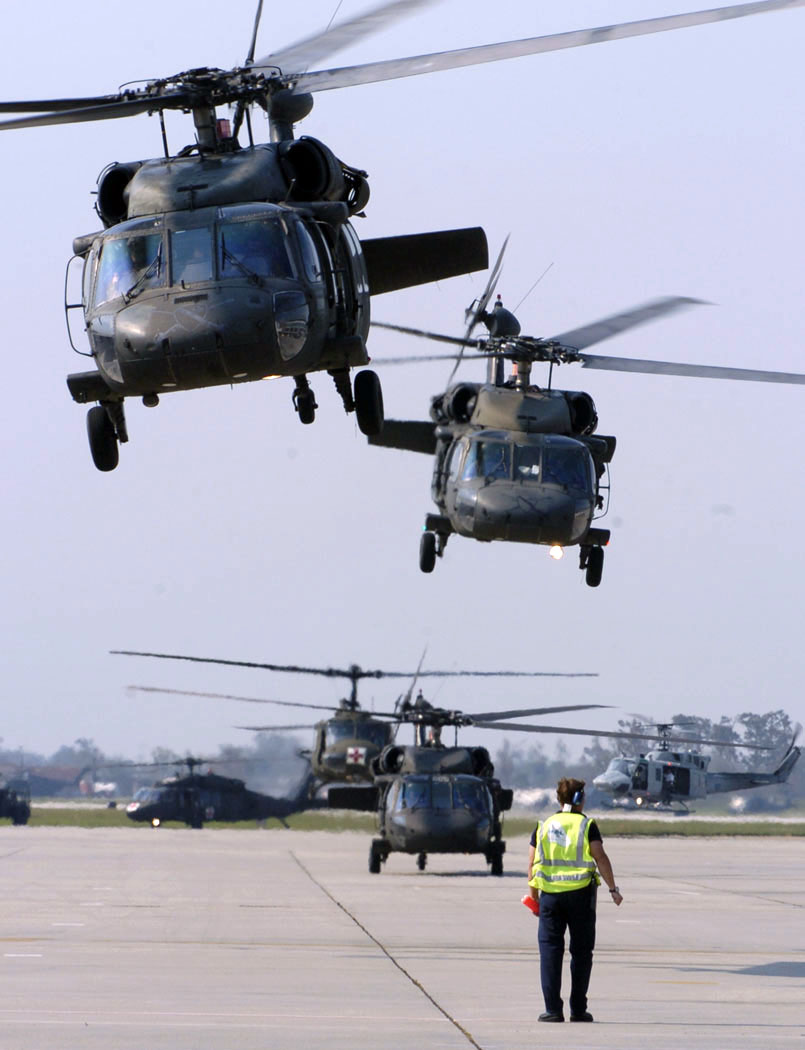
Air Force evacuates the sick and wounded

NEW ORLEANS -- Army and Air Force rescue helicopters depart on their next mission Sept. 2. They are part of a massive operation to evacuate victims in the wake of Hurricane Katrina.